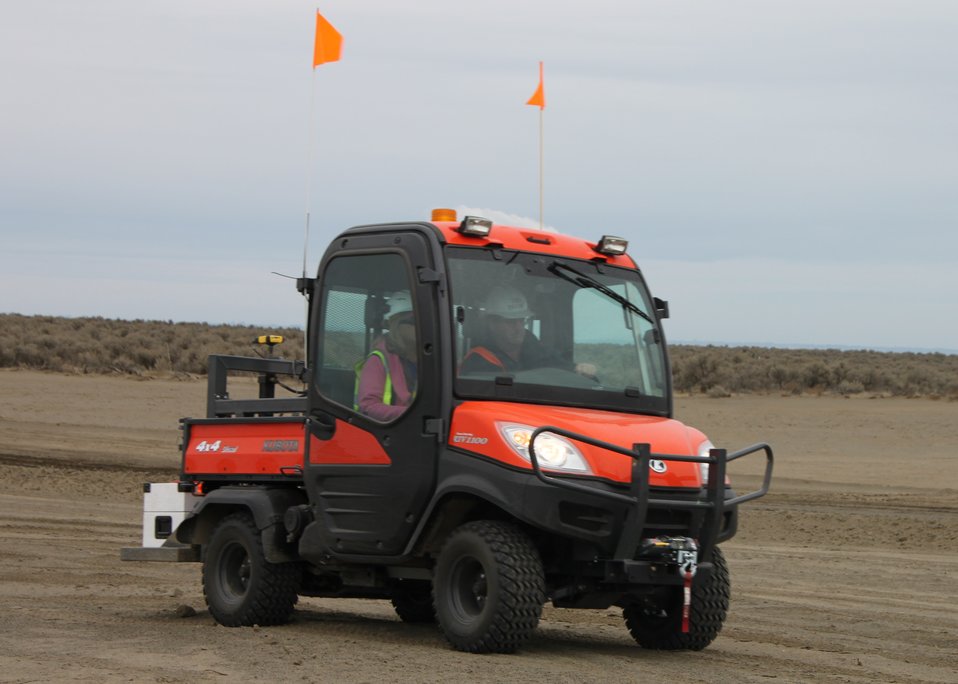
Recovery Act Workers Remediate and Restore Former Waste Sites

A mobile survey vehicle was used to streamline the surveying process. Workers used the vehicle to traverse remediated areas to survey for radiological contamination, which took less time than walking in the field carrying tools typically used to verify cleanup efforts.